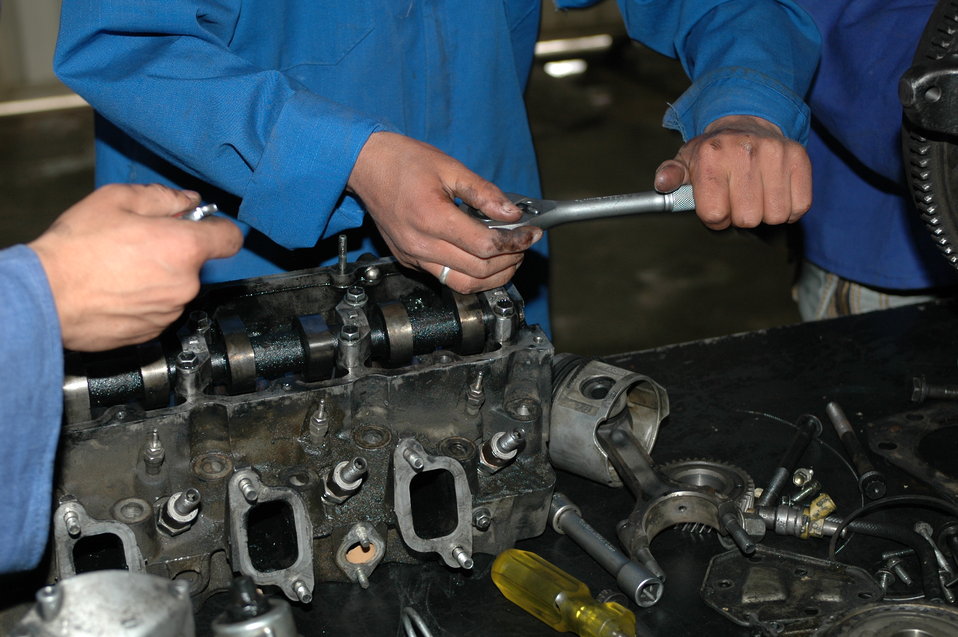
Dr Shah Visits Votech in Kabul